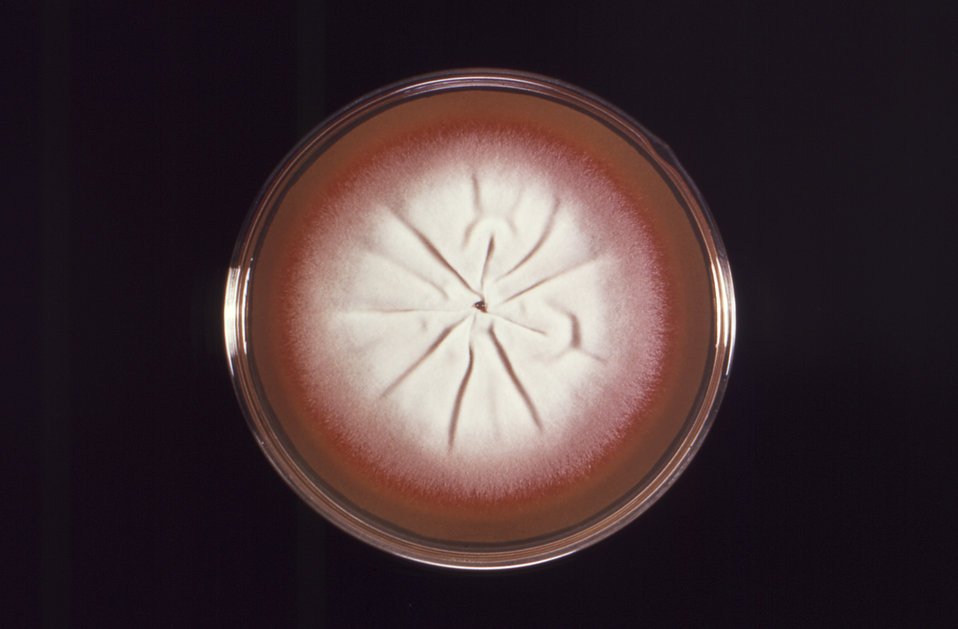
Viewed from the front, this Petri dish culture containing Sabouraud dextrose agar, had grown a single, large colony of the dermatophytic fungus, Trychophyton megninii. Colonies of this anthropophilic specie display a waxy to cottony appearance, and a coloration ranging from a white to bright yellowish-beige or red violet. For a reverse view of this T. megninii colony, see PHIL 14960.